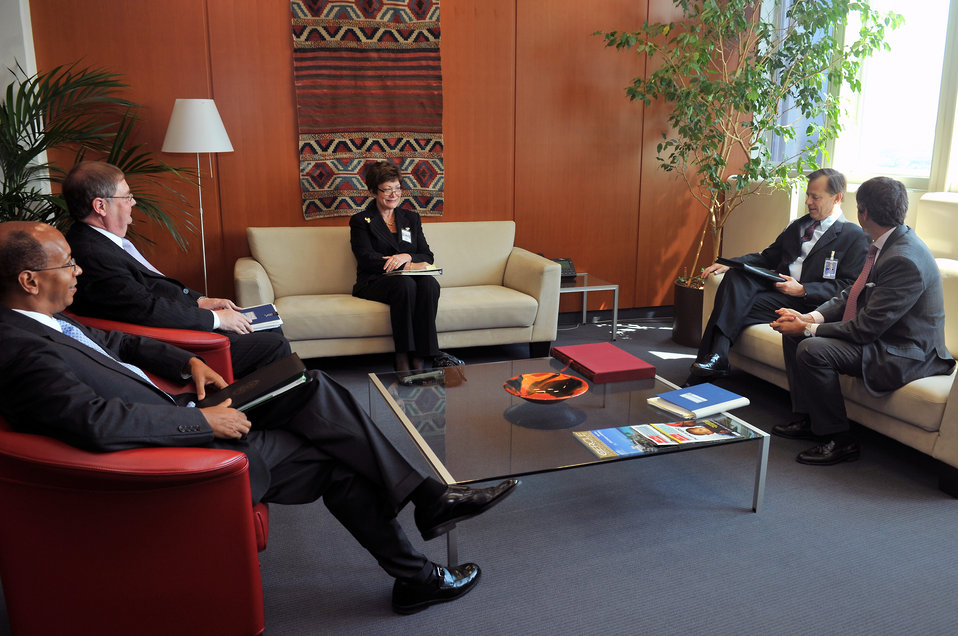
Under Secretary Tauscher Meets With IAEA Deputy Director Waller

David Waller, IAEA Deputy Director General Department of Management, welcomes Ellen Tauscher, Under Secretary of State for Arms Control and International Security Affairs, upon her arrival at the IAEA’s headquarters in Vienna, Austria, on June 15, 2011.